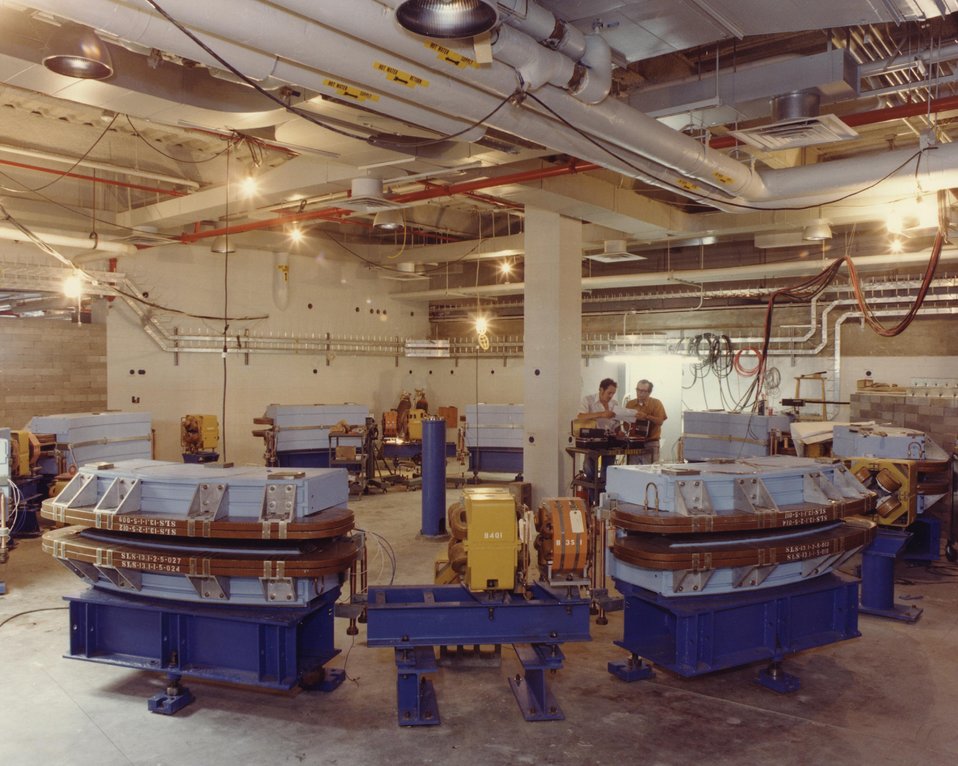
THE VACUUM ULTRAVIOLET RING IS BEING ASSEMBLED.

THE NSLS WILL ACCELERATE AND STORE ELECTRONS AT A SPEED CLOSE TO THAT OF LIGHT TO PRODUCE AN ENTIRE SPECTRUM OF RADIATION, FROM INFRARED THROUGH X-RAYS, FOR UNIQUE APPLICATIONS IN MANY FIELDS OF SCIENCE. THE FACILITY WILL CONSIST OF TWO ELECTRON STORAGE RINGS. THE SMALLER RING WILL ACCELERATE ELECTRONS TO 700 MILLION ELECTRON VOLTS TO PRODUCE ULTRAVIOLET RADIATION, AND THE LARGER RING WILL ACCELERATE ELECTRONS TO 2500 MILLION ELECTRON VOLTS TO PRODUCE X-RAYS. THE ULTRAVIOLET LIGHT CAN BE USED TO STUDY: CHEMICAL REACTIONS AND STRUCTURES, THE PROPERTIES OF PURE METALS, ALLOYS, AND INSULATING MATERIALS, AND THE TRANSFER OF ENERGY IN BIOLOGICAL SYSTEMS. X-RAY LITHOGRAPHY MAY BE USED BY THE ELECTRICAL INDUSTRY IN THE PRODUCTION OF MICROSCOPIC PRINTED CIRCUITS FOR COMPUTERS AND MICROPROCESSORS. X-RAY MICROSCOPY COMPLEMENTS ELECTRON MICROSCOPY, PERMITTING OPERATIONS THAT WOULD BE IMPOSSIBLE WITH AN ELECTRON MICROSCOPE.